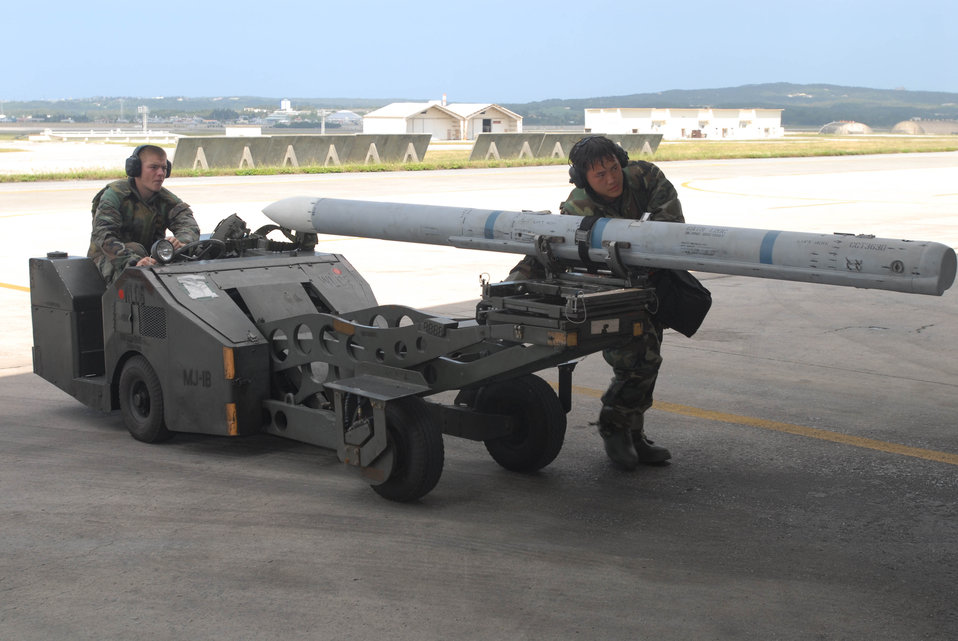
Weapon-loading warriors

Airman 1st Class Dustin Fox (driving) and Staff Sgt. Fong Vang prepare to load an AIM-120 air-to-air missile on an F-15 Eagle during an combat capability exercise Oct. 18 at Kadena Air Base, Japan. The 18th Wing exercise from Oct. 13 to 19 tested the wing's ability to respond to a wartime situation. Both Airman Fox and Sergeant Vang are from the 18th Aircraft Maintenance Squadron.